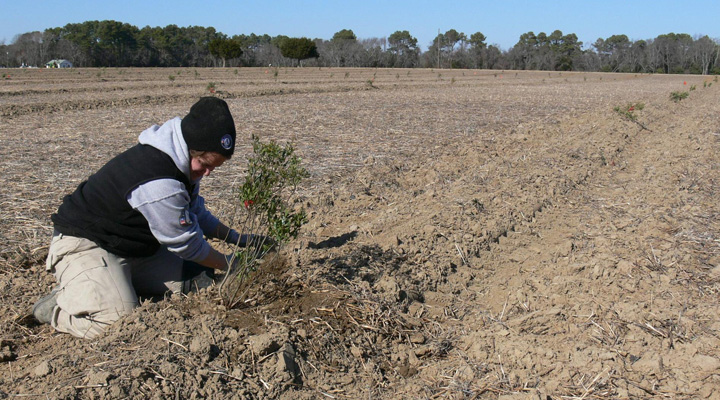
Tree planting at habitat restoration project

Tree planting for a habitat restoration project on the Eastern Shore of Virginia.